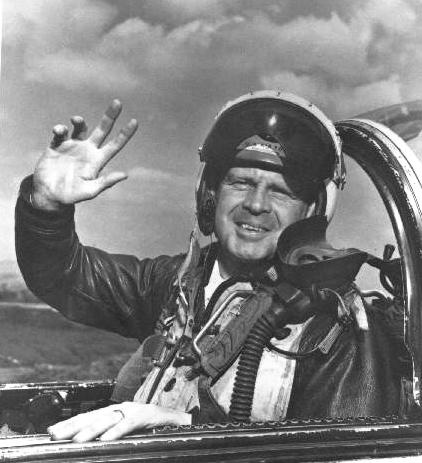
51st Fighter Wing Aces

Lt. Col. George Ruddell became the 11th ace of the wing May 18, 1953. He was the Commander, 39th Fighter-Interceptor Squadron.